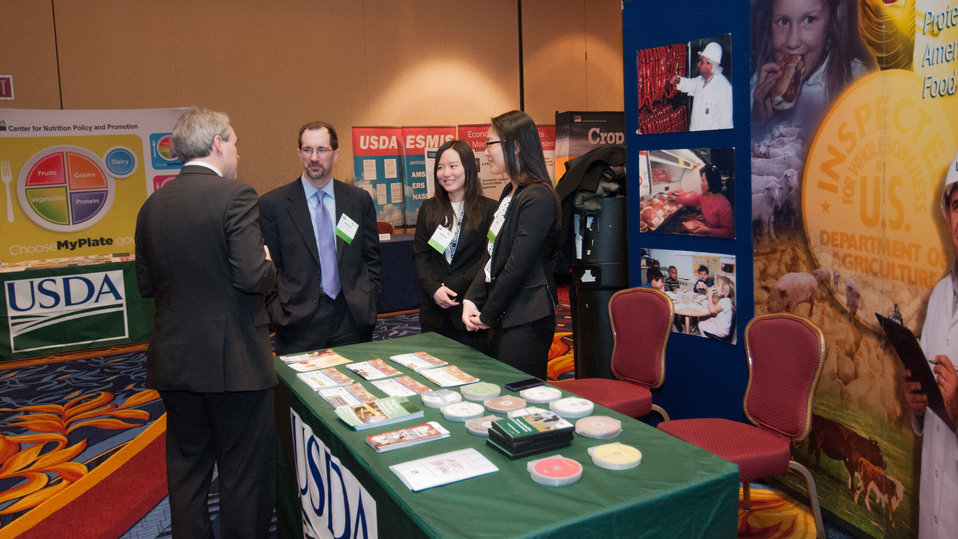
U.S. Department of Agriculture (USDA) Food Safety & Inspection Service’s (FSIS) Keith Payne, facing camera, left to right, Songhee Lee, and Sujin Park providing information to participants of the 2013 Agricultural Outlook Forum, held at the Crystal Gateway Marriott Hotel, Arlington, Virginia on Thursday, Feb. 21, 2013. This annual Forum brings together producers, policymakers, and business, government, and industry leaders to meet, exchange ideas, and discuss timely agriculture issues.